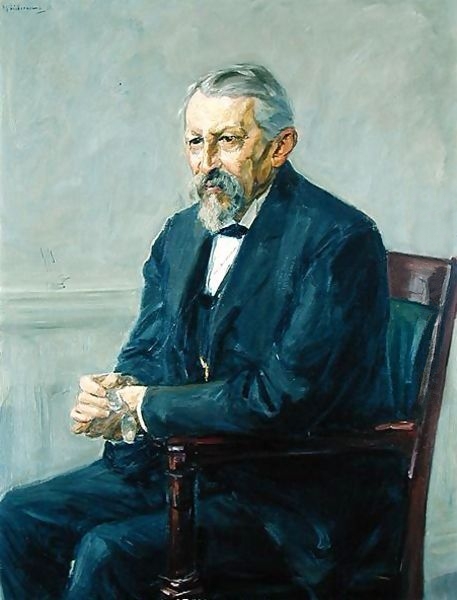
Hermann Strebel